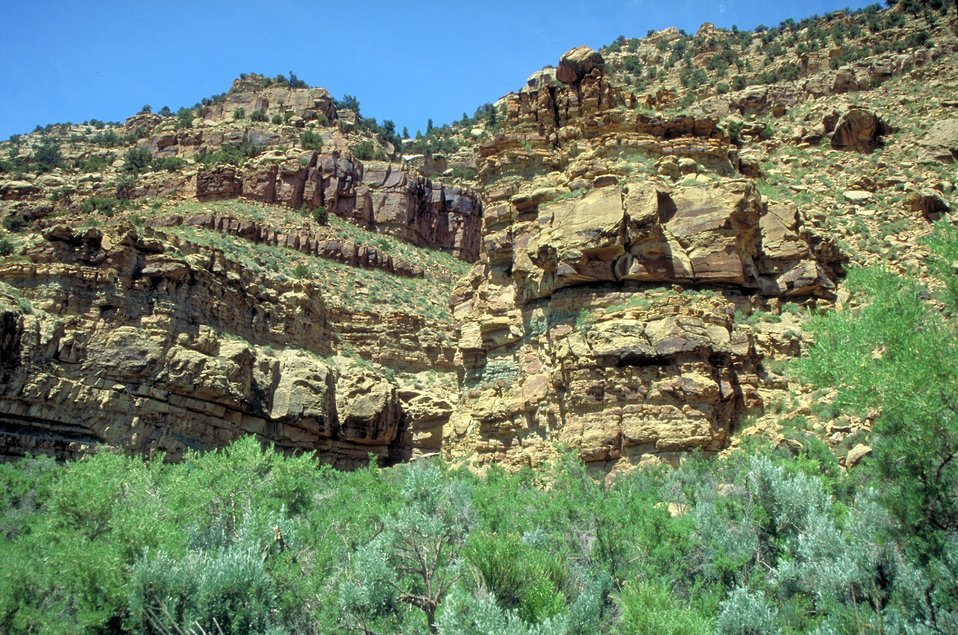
Nine-Mile Canyon near Price, Utah.